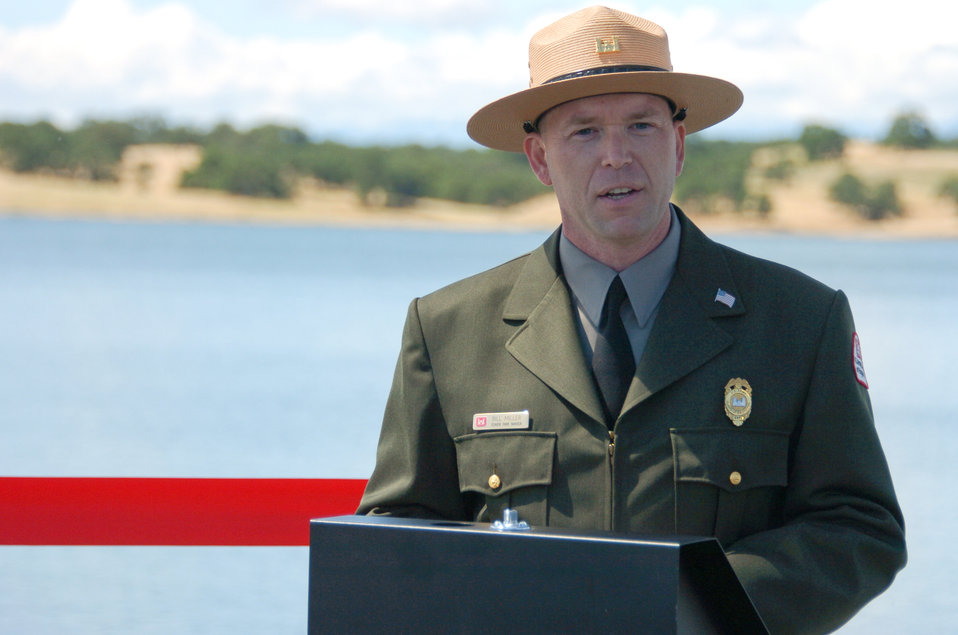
New boat ramp opens at Black Butte Lake

U.S. Army Corps of Engineers senior park ranger Bill Miller welcomes guests at a ribbon-cutting ceremony for a new boat ramp at Black Butte Lake, Calif., May 18, 2011. An expansion project funded by a grant from the California Department of Boating and Waterways doubled the size of the existing ramp and added new parking, restrooms and solar-powered lighting.